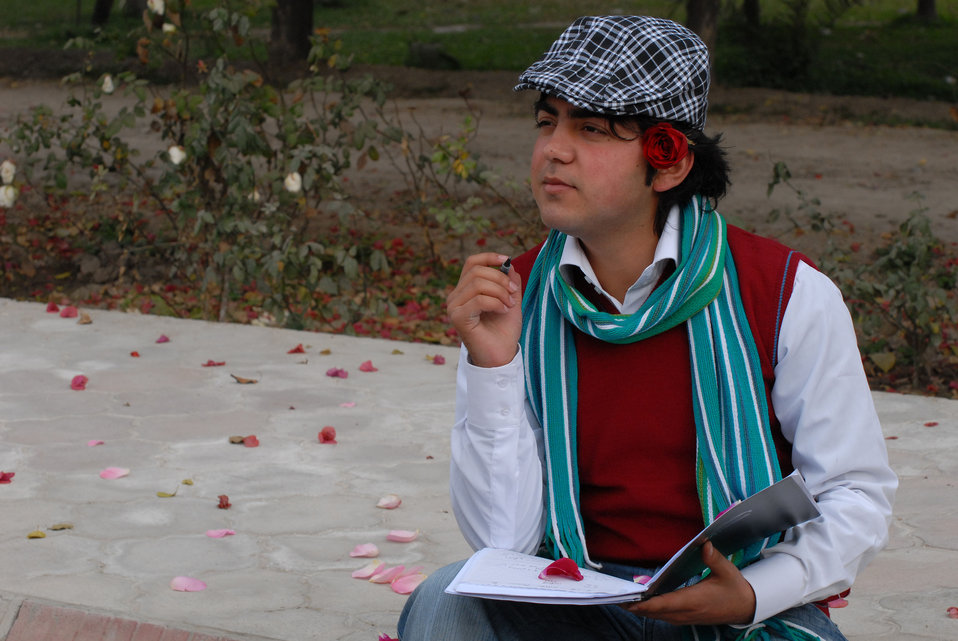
'On the Road' in Nangarhar Province